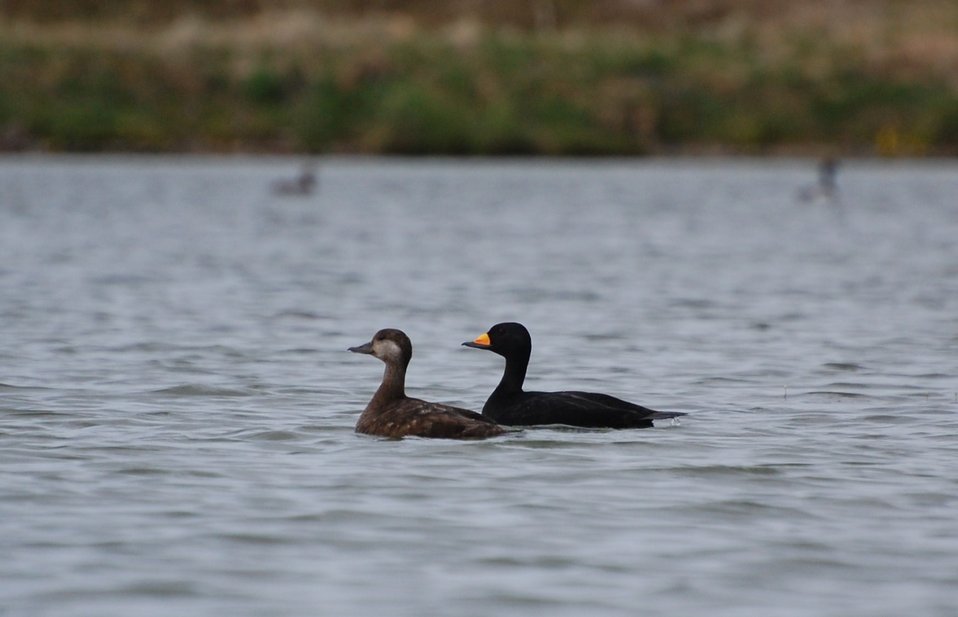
Black Scoter pair

Izembek National Wildlife Refuge